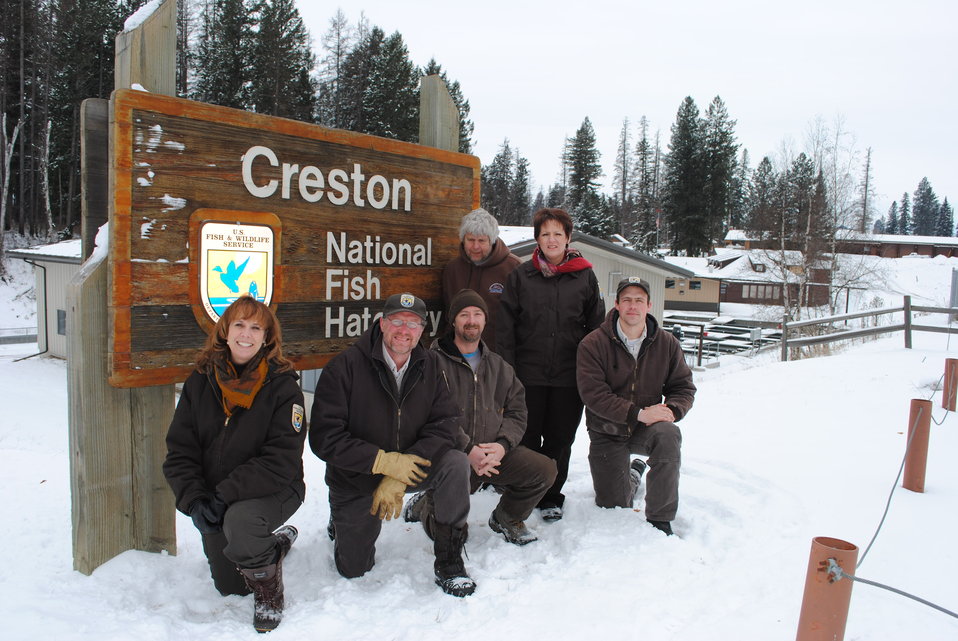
Staff at the Creston National Fish Hatchery

Creston National Fish Hatchery was established in 1939 and orginally provided trout for the waters of Glacier National Park.

Today, the hatchery focuses on mitigation stocking to meet goals of the Hungry Horse Dam Fisheries and stocking Montana's reservations to meet FWS Tribal Trust responsibilities.

In 2012, Creston National Fish Hatchery stocked 760,275 rainbow trout and 178,175 westslope cutthroat trout, for a grand total of 938,450 trout.

Creston also provides many outreach oppertunities for the Flathead Valley schools and families. The hatchery has an active Friends Group that help provide volunteer services at the hatchery by giving tours at the Fish Hatchery, on the nature trail, and at the new Nature Explore Outdoor Classroom.